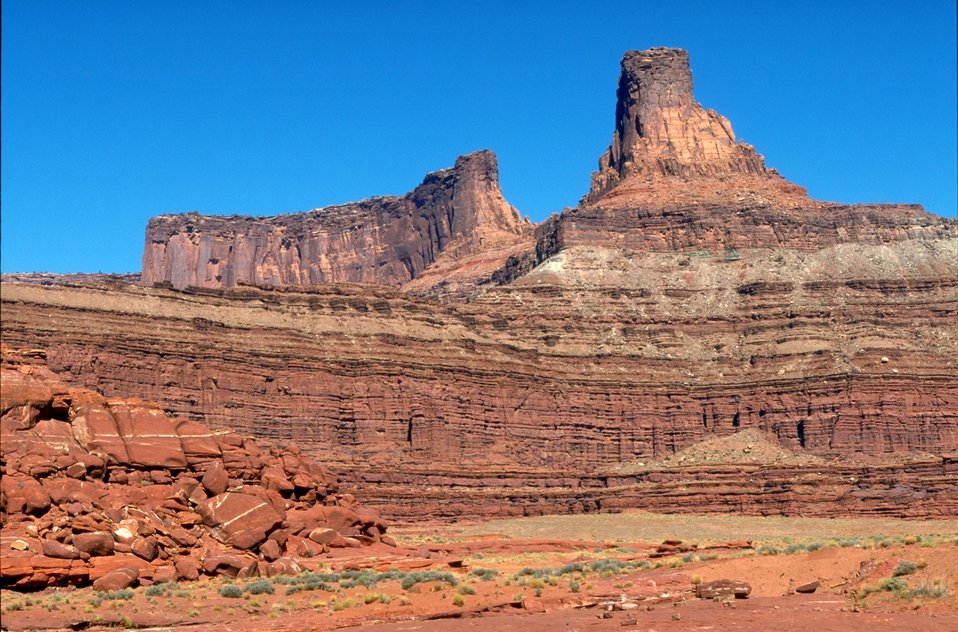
Buttes north of the Shafer Trail.